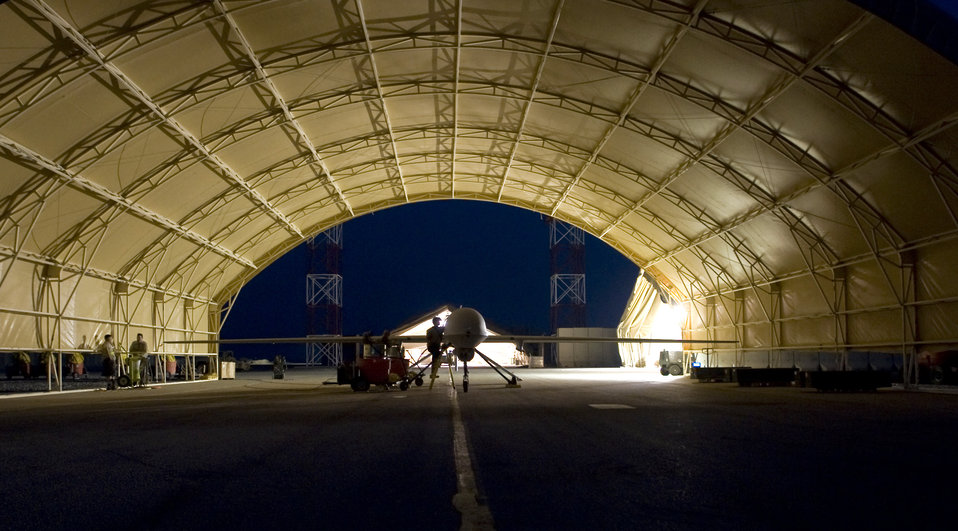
Night watch

An MQ-1 Predator goes through post-flight maintenance Aug. 11 at Ali Base, Iraq. The Predator provides integrated and synchronized close-air combat operations, including intelligence, surveillance and reconnaissance, to ground commanders. The Predator is assigned to the 46th Expeditionary Reconnaissance and Attack Squadron Det. 1 here.